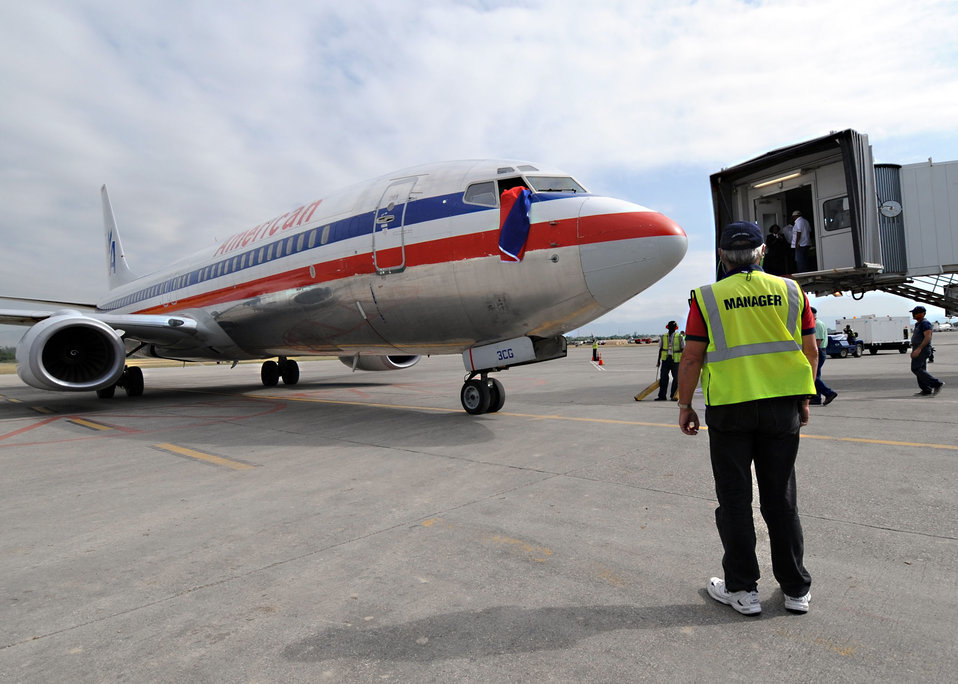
Haiti airport transitions, commercial flights begin

Commercial airlines are resuming flights into the Toussaint L'Ouverture International Airport Feb. 19, 2010, Port-au-Prince, Haiti. This is a significant step forward for the Haitian government after a massive earthquake damaged many parts of the Caribbean nation.